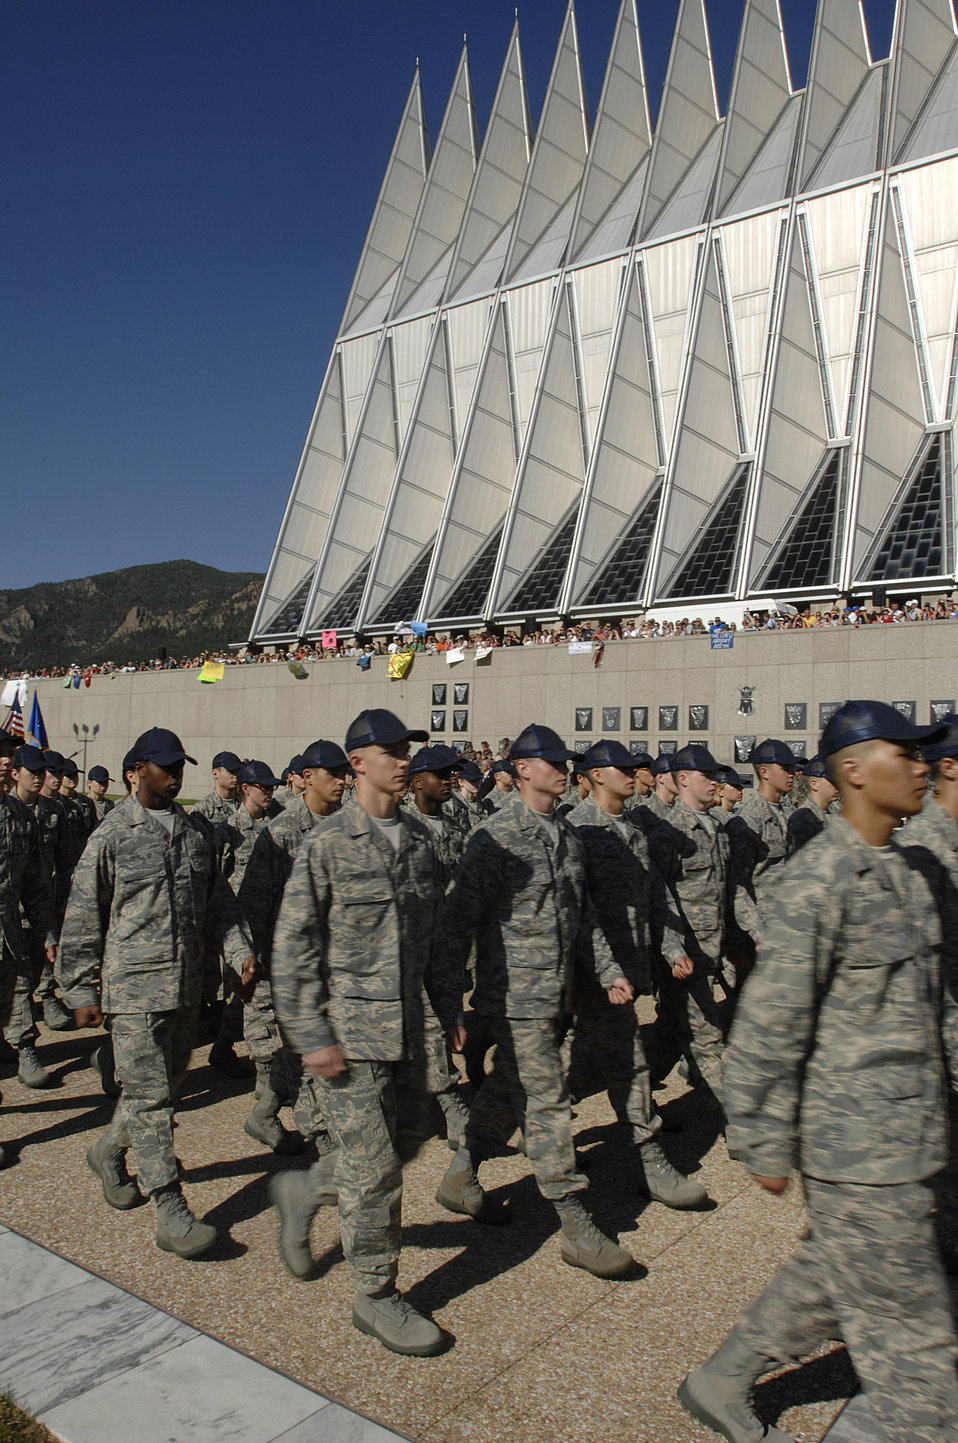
Class of 2012 Arrives

The Class of 2012 marches in front of the Cadet Chapel on Day Two of the 38 days of Basic Cadet Training June 27 at the U.S. Air Force Academy, Colo. Inprocesing marks the start of 38 days of Basic Cadet Training, which is designed to prepare basic cadet trainees for entry into the cadet wing.